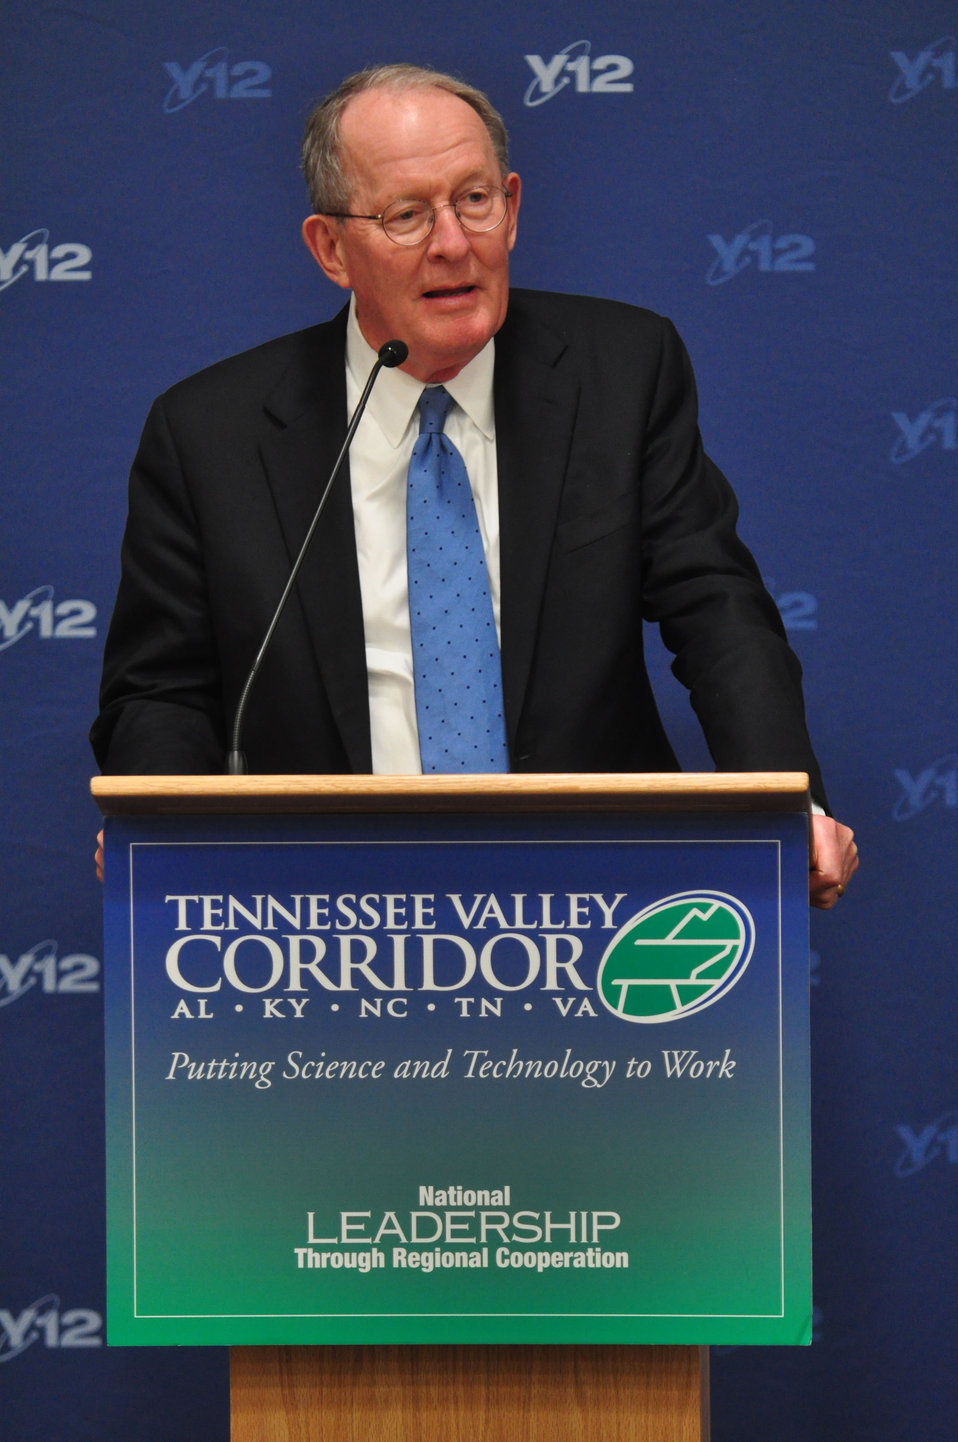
U.S. Senator Lamar Alexander Tennessee Valley Corridor Summit Oak Ridge

13-062 DOE photo Lynn Freeny 5-29-2013 Oak Ridge Tennessee